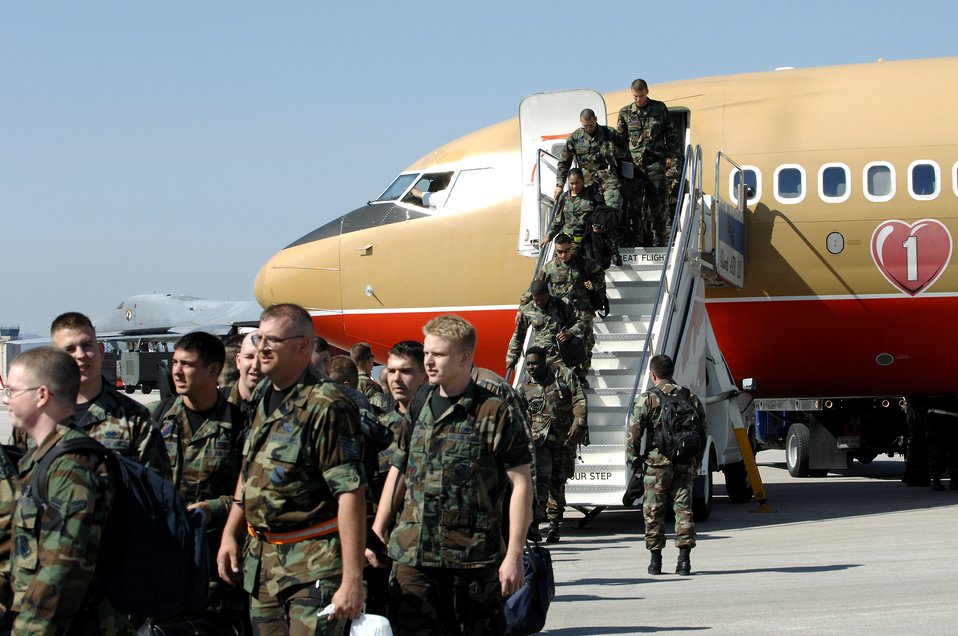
Dyess Airmen, aircraft arrive at Ellsworth

Airmen from the 7th Bomb Wing at Dyess Air Force Base, Texas, exit an aircraft on the flightline Sept. 20 at Ellsworth AFB, S.D. Ellsworth AFB will temporarily house 550 Airmen and 20 B-1 aircraft from Dyess AFB while 6,600 feet of runway are under repair there.